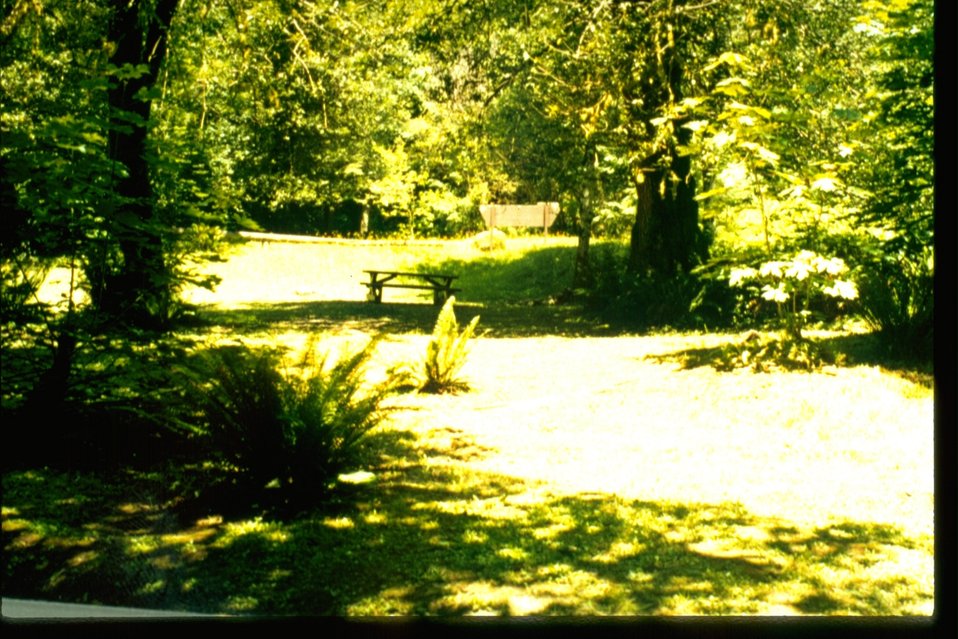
Bear Creek Recreation Site.